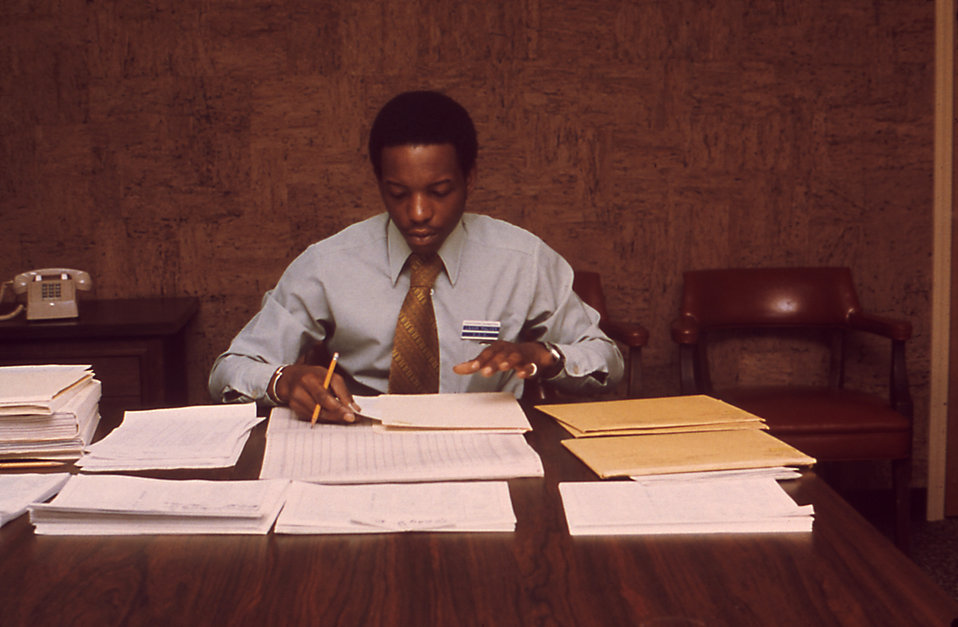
A CDC staff member is collecting data at Doctor's Hospital, Tucker, Georgia, 1977.